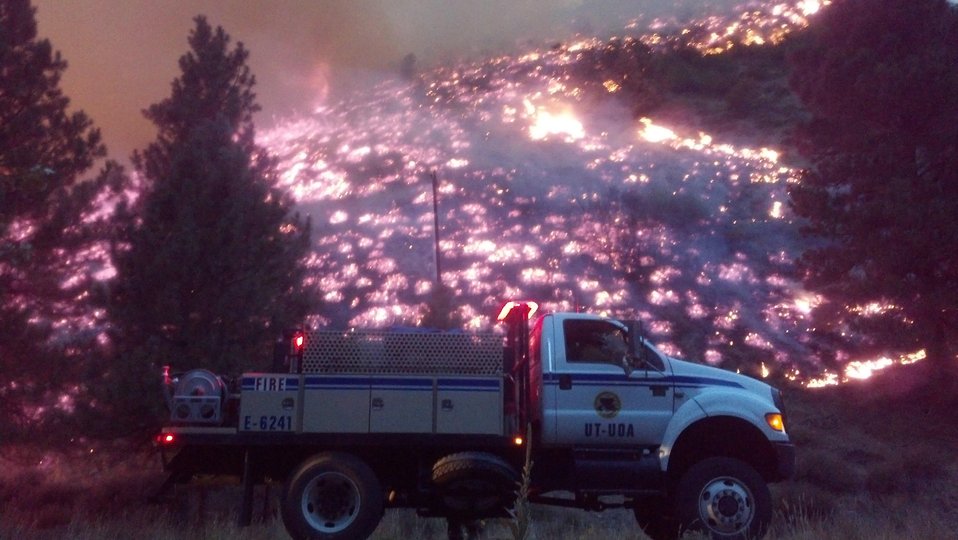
Wildland engine patrols the perimeter of the Elk Complex Fire. The Elk Complex Fire in the Boise National Forest near Pine, ID began on Aug. 08, 2013 by lightning has consumed approximately 111,977 acres and is approximately 10% contained.